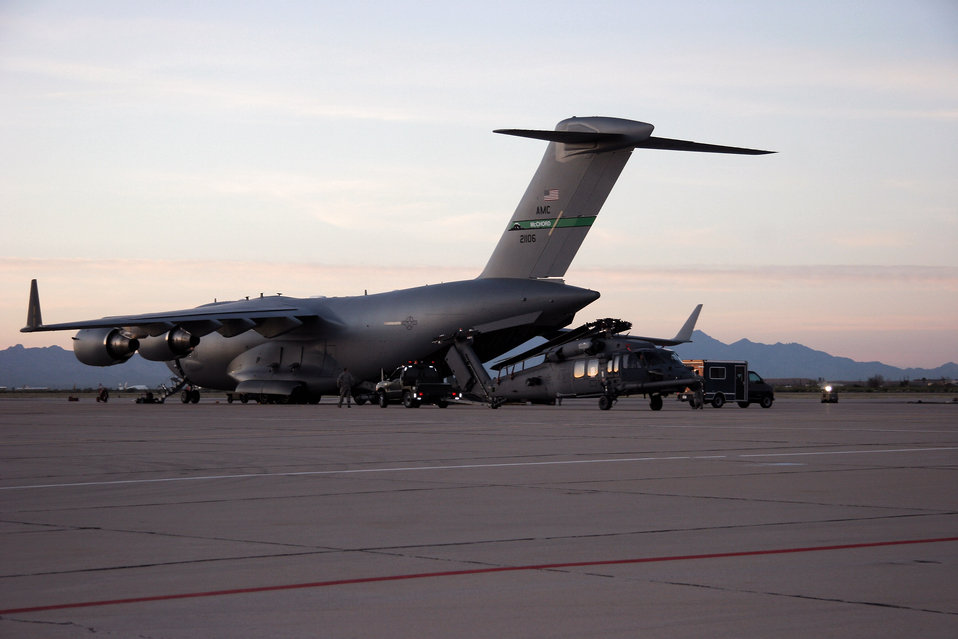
Rescue unit to support space shuttle launch

Aircraft maintainters from the 943rd Maintenance Squadron prepare to load a HH-60G Pave Hawk helicopter onto a C-17 Globemaster III March 7 at Davis-Monthan Air Force Base, Ariz. Two helicopters were loaded onto the C-17 from McChord Air Force Base, Wash, and deployed to Patrick AFB, Fla., to augment the launch of the Space Shuttle Discovery. Twenty reservists from the 943rd Rescue Group are supporting this mission.